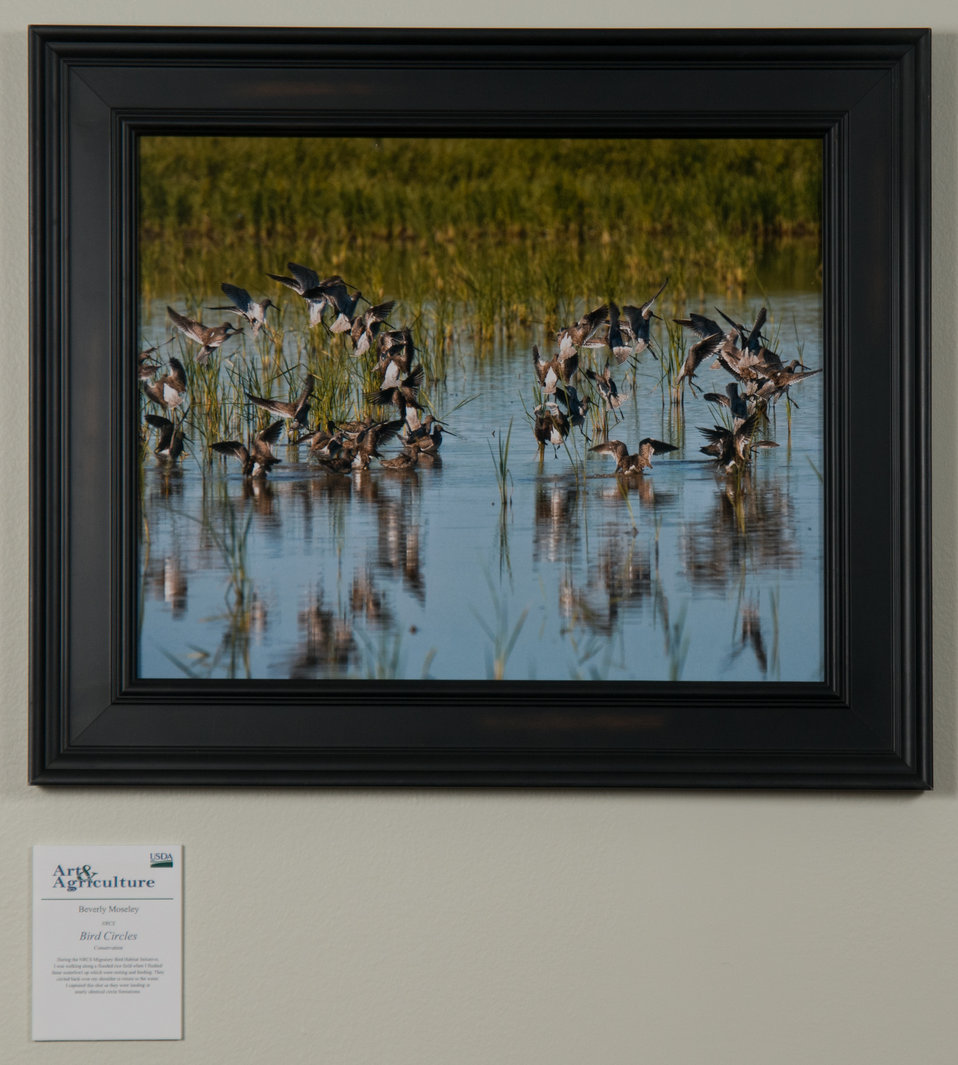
Online Viewer's Choice entries of the 2013 Art & Agriculture, Tuesday, July 9, 2013, in the South Building, Washington, D.C. Themes were expressed by employees from across the department and the contest was open to full-time and part-time USDA employees. Winning artwork will be displayed till the end of the year. U.S. Artistic expression is a creative outlet that is vital for an individual to grow and develop.